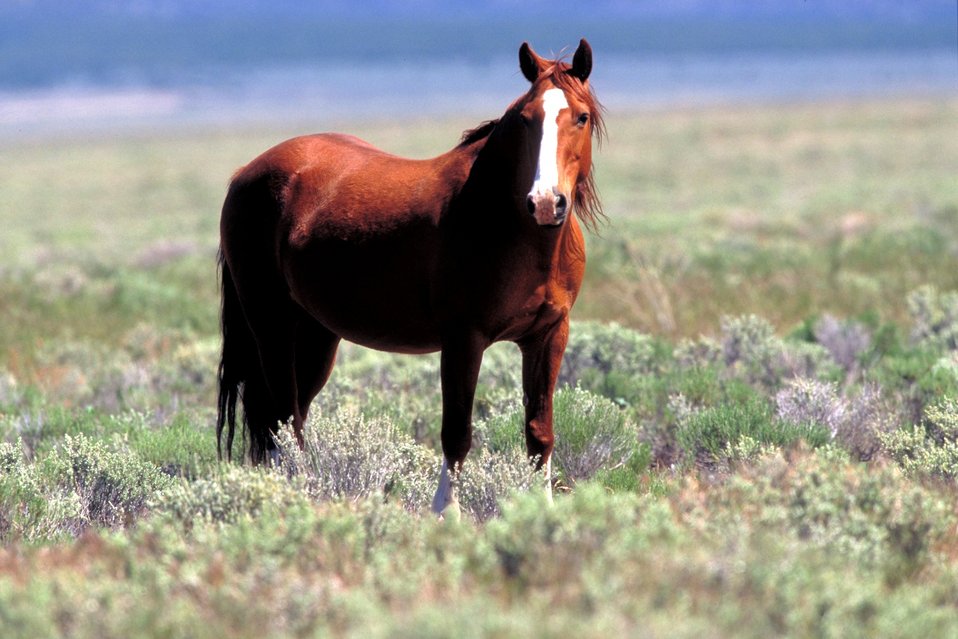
Onaqui Herd near Dugway, Utah.